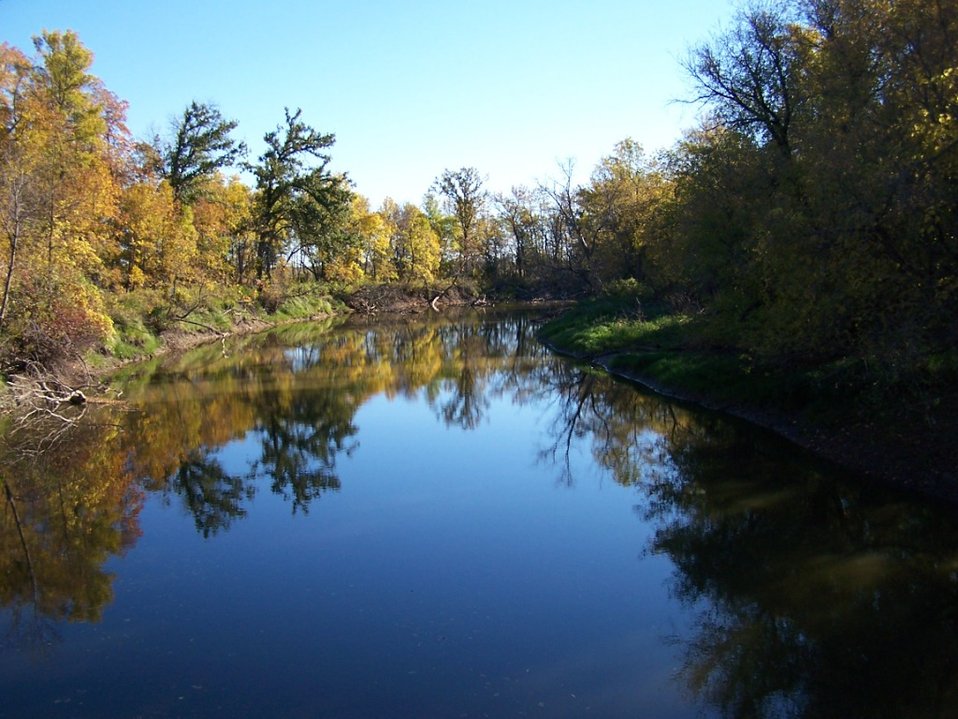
Souris River from Johnson Bridge

Souris River at the J. Clark Salyer National Wildlife Refuge in North Dakota.